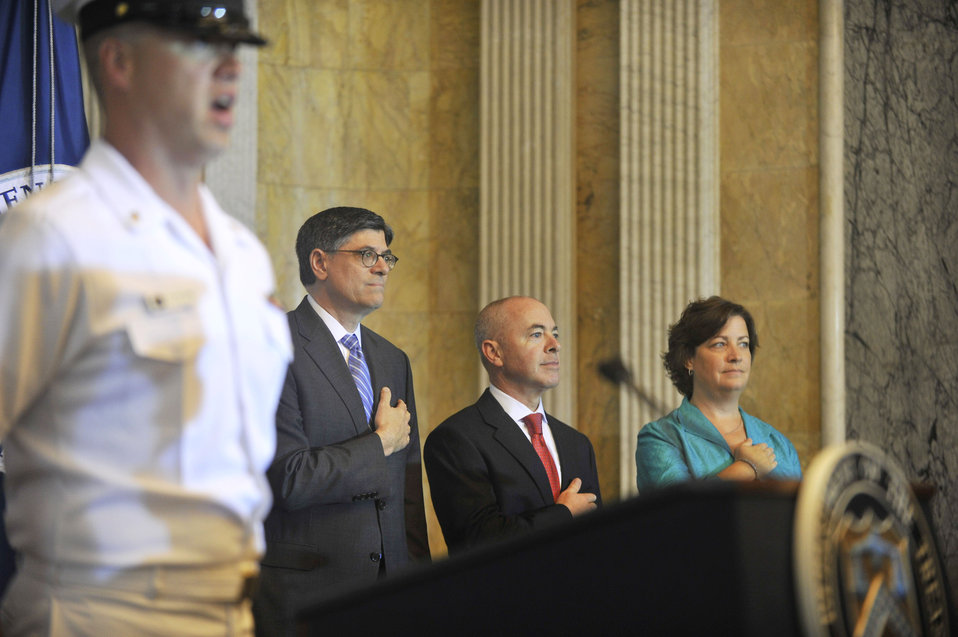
Treasury hosts Naturalization Ceremony before Independence Day

July 3, 2013 - Secretary Lew, U.S. Citizenship and Immigration Services (USCIS) Director Alejandro Mayorkas, and Sarah Taylor, District Director, Washington District USCIS, pledge during singing of the National Anthem.